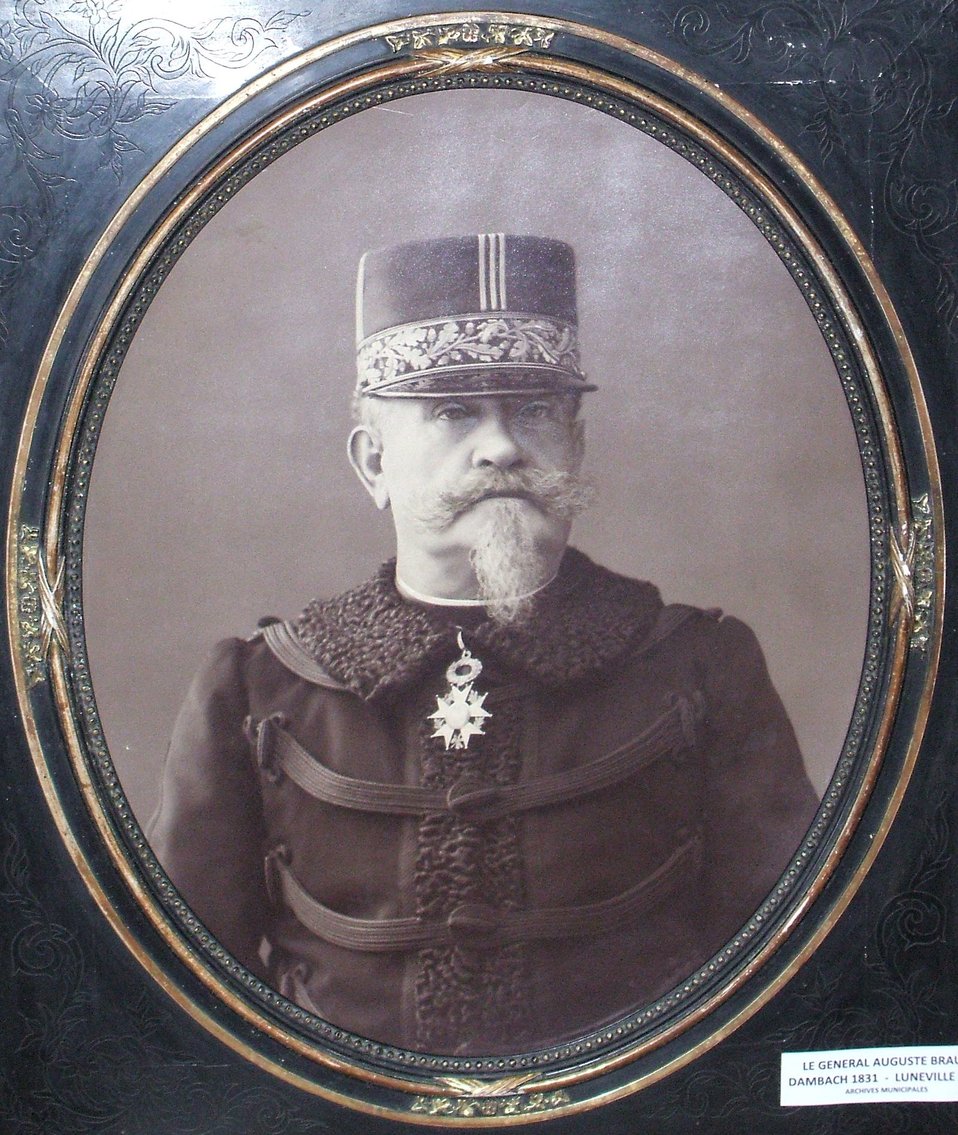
Français : Général né à Dambach-la-Ville